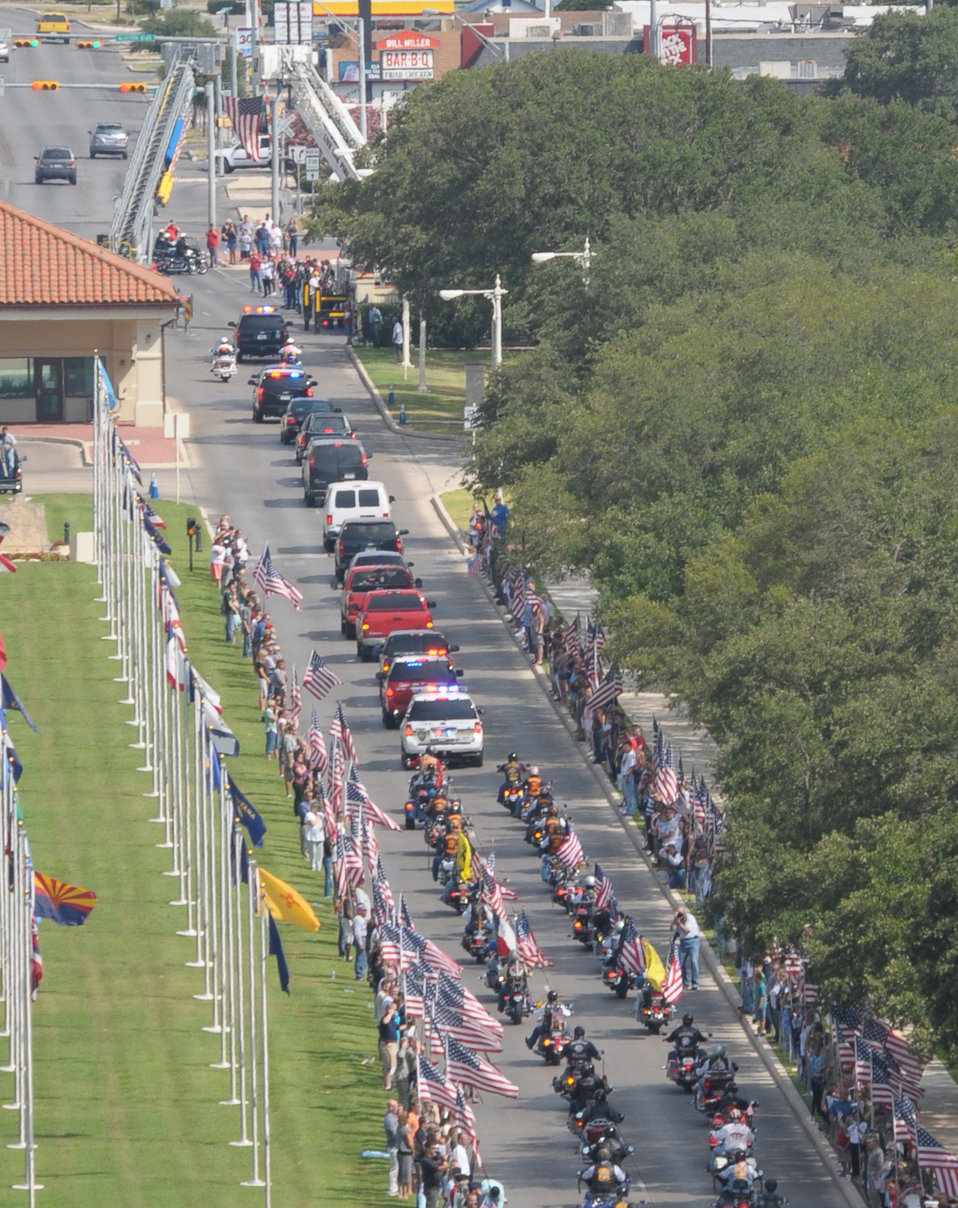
Hundreds show for fallen Marine's return home

The motorcade carrying the casket of Marine Corps Lance Cpl. Brandon Lara passes under a flag suspended between the extended ladders of fire trucks from Live Oak, Texas, and Universal City, Texas, July 26 as it exited Randolph Air Force Base, Texas. The motorcade is trailed by more than 100 motorcyclists of the Patriot Guard Riders.